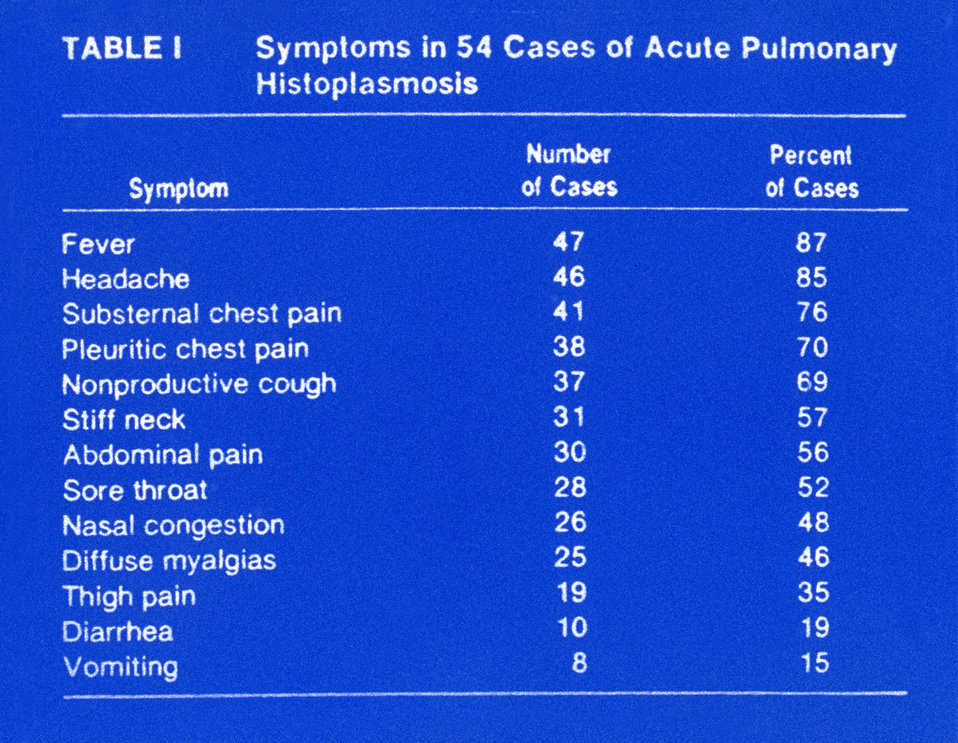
Symptoms of acute pulmonary histoplasmosis.